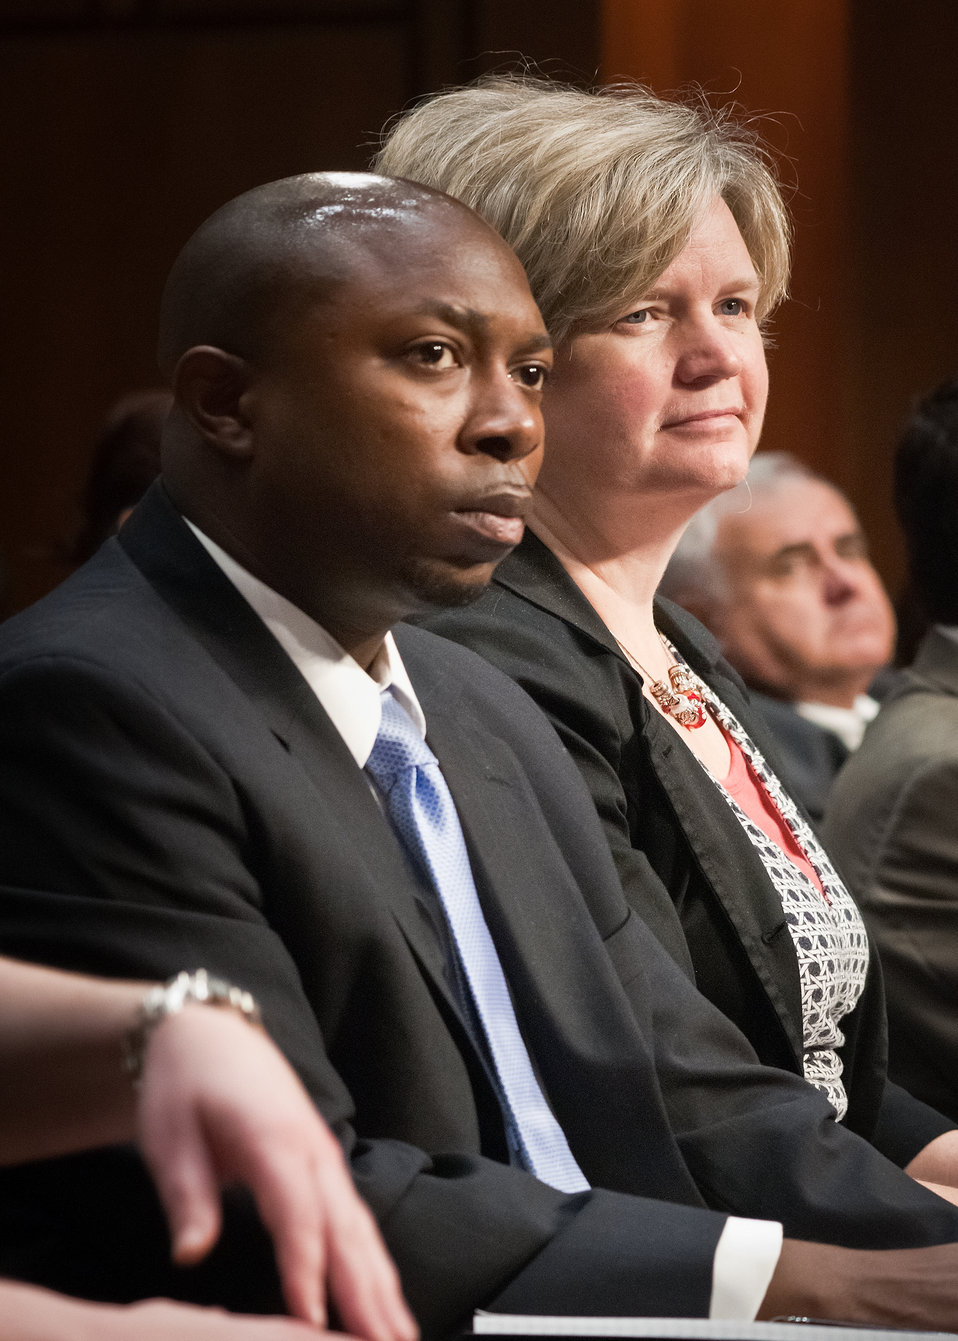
Karis Gutter (left), Acting Deputy Undersecretary, Farm and Foreign Agricultural Service and Susan Palmeri (right), Acting Assistant Secretary, Congressional Relations accompanied Agriculture Secretary Tom Vilsack to a hearing of the Senate Committee on Agriculture, Nutrition and Forestry on the next Farm Bill Thursday, May 26, 2011, in Washington, DC.